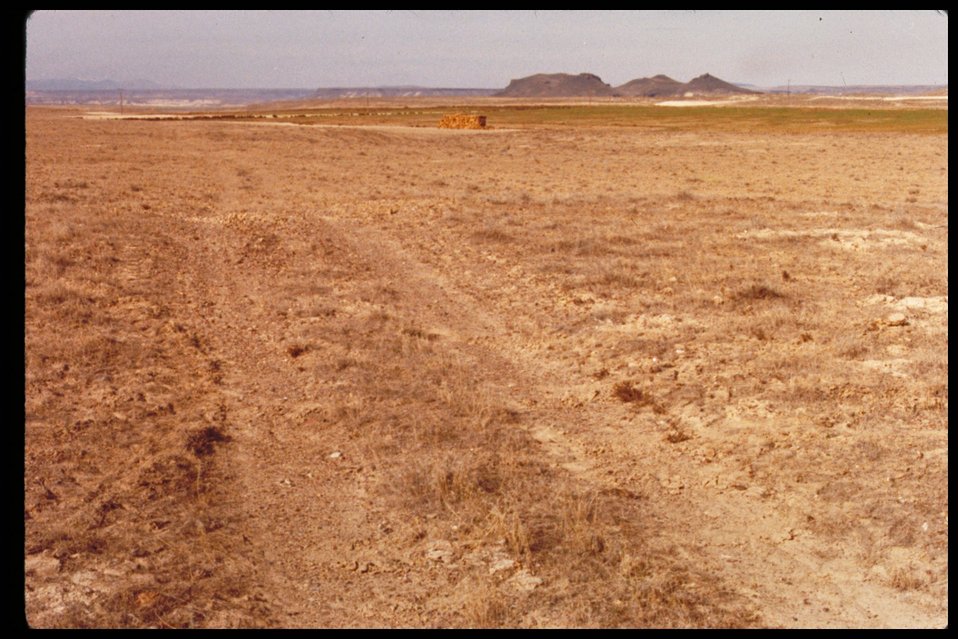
Oregon Trail near Castle Butte Lower Snake River District